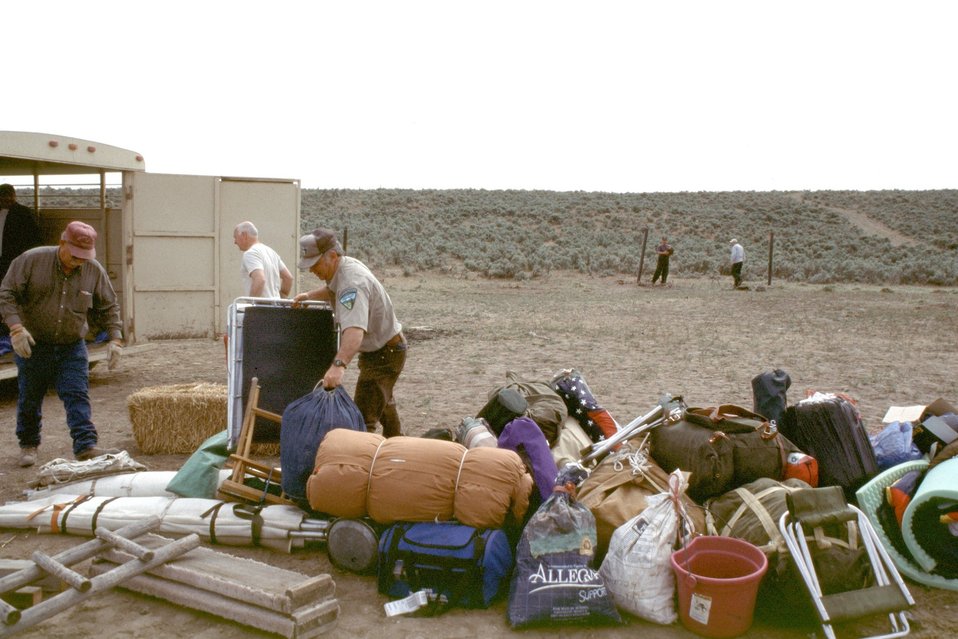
NHOTIC 10th Anniversary, wagon train reenactment. Breaking camp on the Oregon Trail.